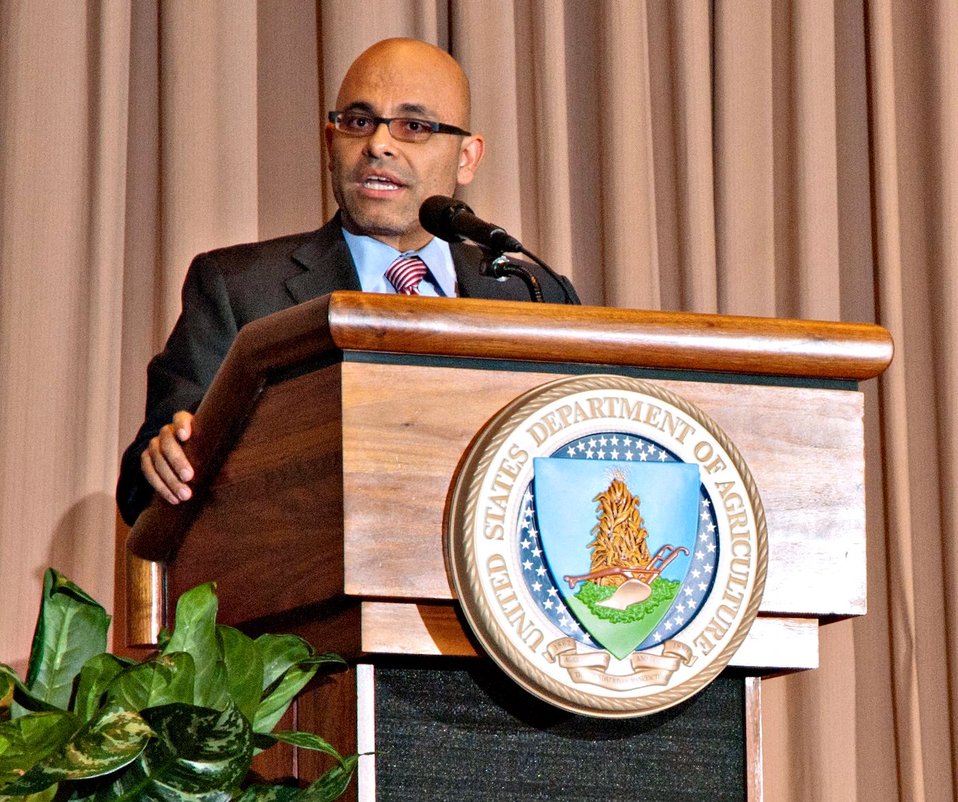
White House Initiative on Educational Excellence for Hispanic Americans Deputy Director José Rick was the keynote speaker for the observance of National Hispanic Heritage Month at the United States Department of Agriculture (USDA) in the Thomas Jefferson Memorial Auditorium, in Washington, D.C. on Thursday, September 15, 2011.